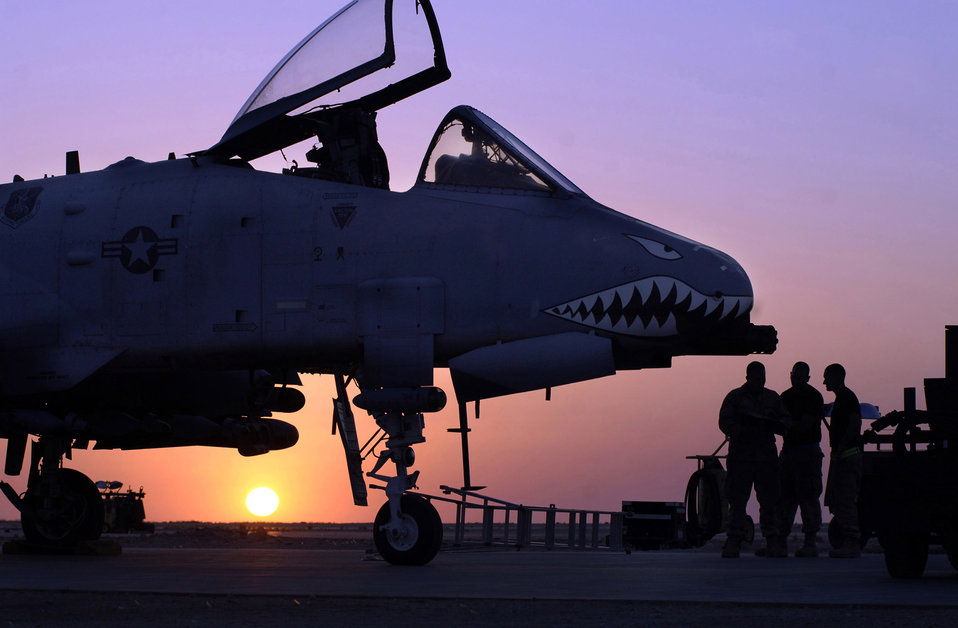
Feb. 12 airpower summary: A-10s destroy enemy targets

Senior Airman Joseph Cordero, Staff Sgt. Andrew House and Staff Sgt. Barrett Read trouble shoot an electronic error on an A-10 Thunderbolt II on the flightline at Al Asad Air Base, Iraq.